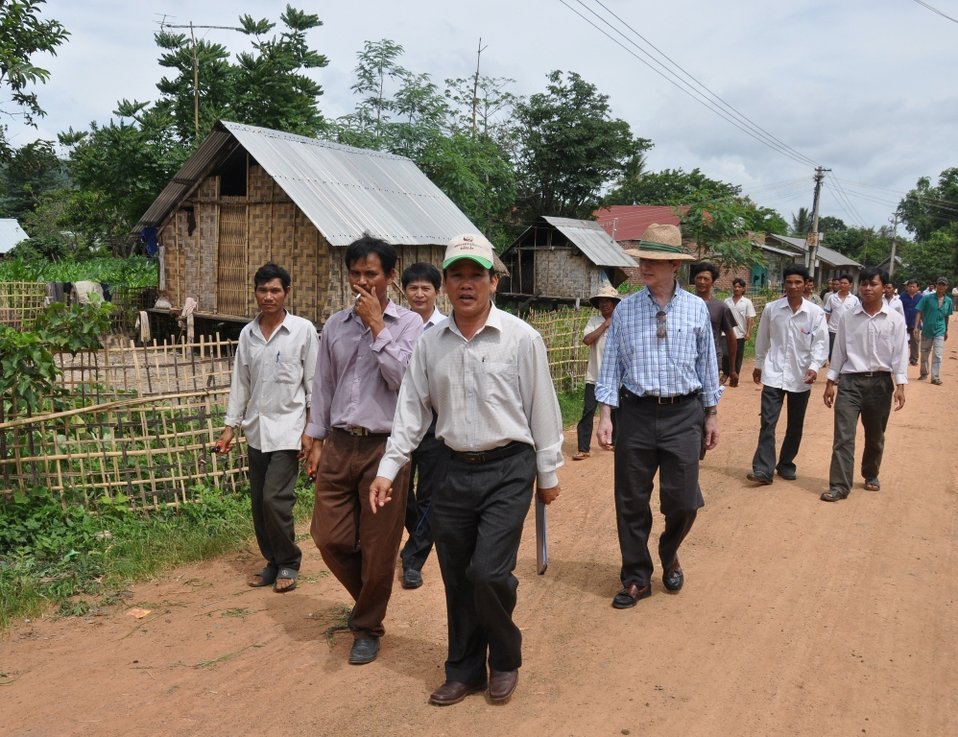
USAID promotes sustainable cocoa farming in rural communities of central Vietnam.

USAID Mission Director Francis Donovan tours a cocoa producing town in central Vietnam.